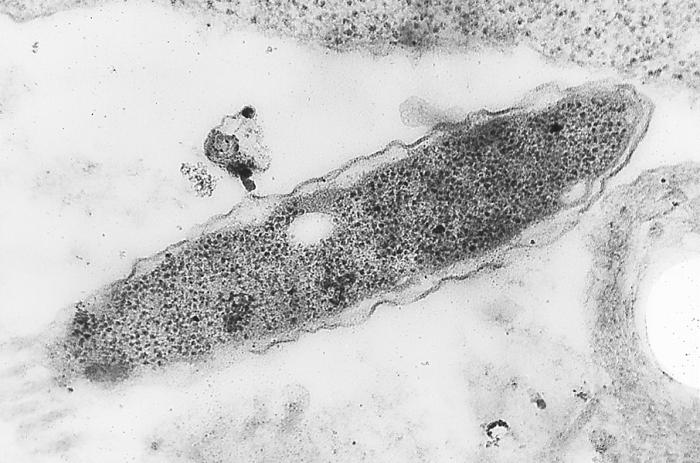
This thin section transmission electron micrograph (TEM) depicted a Gram-negative Legionella pneumophila bacterium, which was cultured in an embryonated hen's egg; Magnified approximately 119,500x.